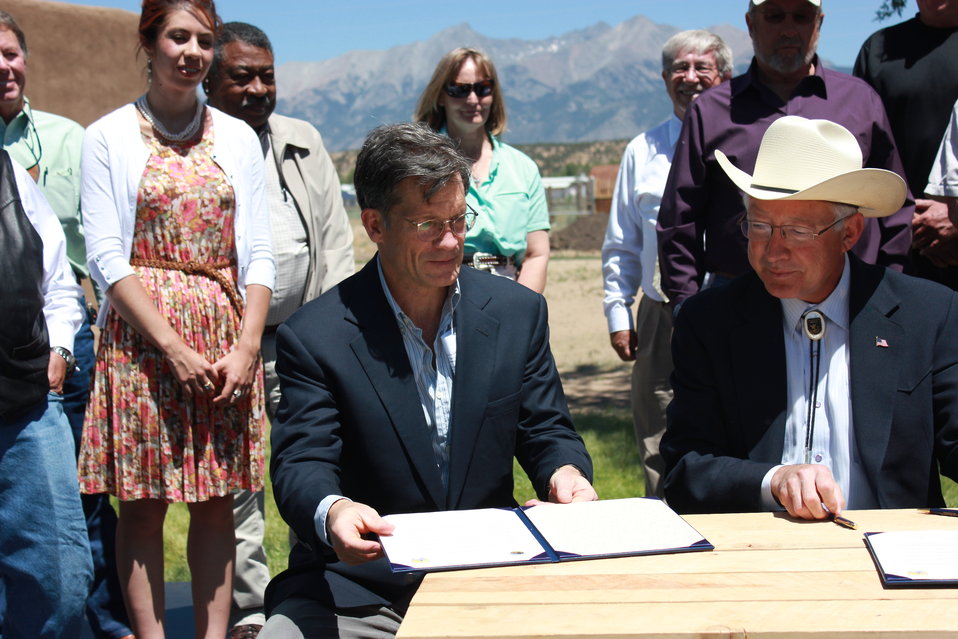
Historic Conservation Easement in Sangre de Cristo Mountains